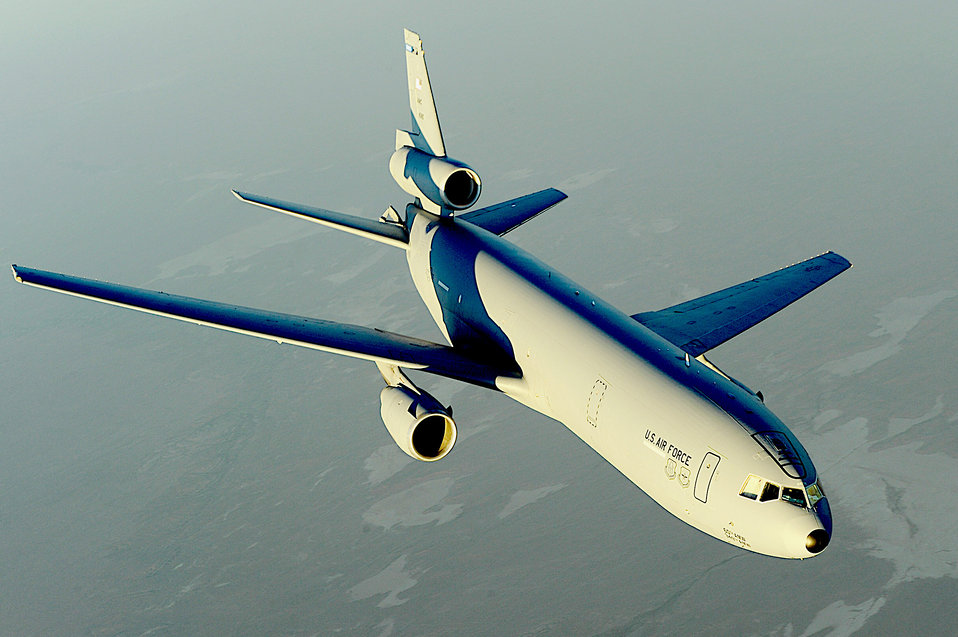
KC-10s fuel the flight

A KC-10 Extender flies over Afghanistan. Using either an advanced aerial refueling boom, or a hose and drogue centerline refueling system, the KC-10 can refuel a wide variety of U.S. and allied military aircraft within the same mission.